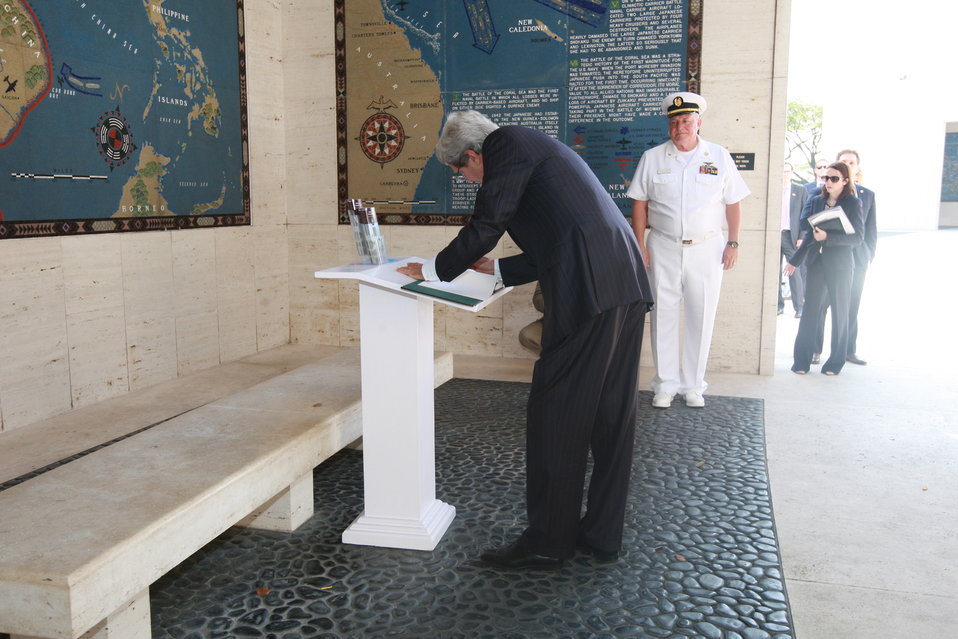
Secretary Kerry Signs the Guestbook at the Manila American Cemetery

Larry Adkison¸ Superintendent of the Manila American Cemetery, escorts U.S. Secretary of State John Kerry as he signs the cemetery guestbook in Manila, Philippines, on December 17, 2013.